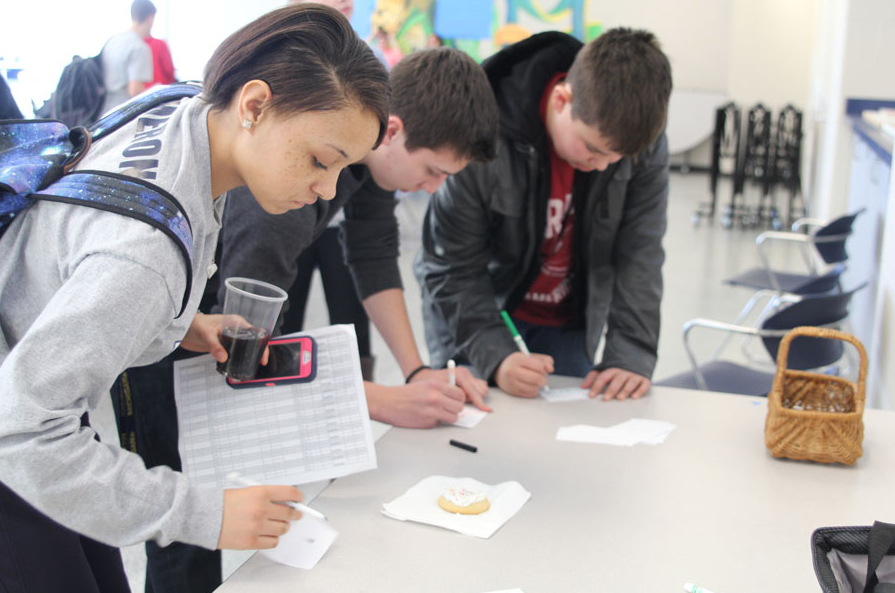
Mill Valley

Filling out the answer to a trivia question, freshman Kameron Smith takes a break from seminar to enjoy the jagPride-sponsored National Drug Fact Awareness Week on Jan. 29.